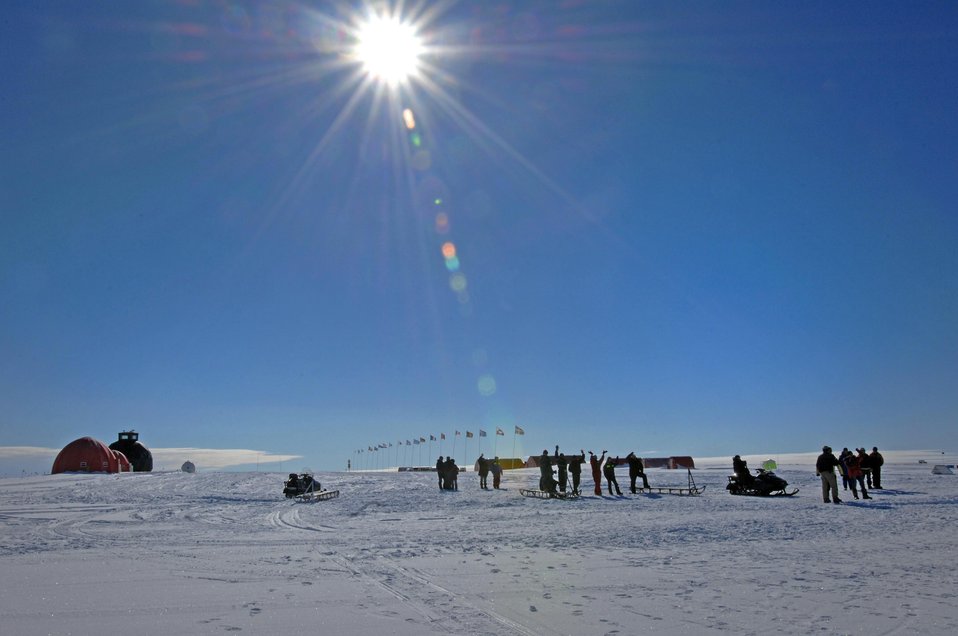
Polar research

Scientists and others wave goodbye to fellow workers July 28, 2010, at a remote science research site in Greenland. The New York Air National Guard's 109th Airlift Wing is the only military unit in the world to fly the ski-equipped LC-130 Hercules and has flown missions to Greenland since 1975. The unit now provides airlift support to the National Science Foundation's polar research program here.